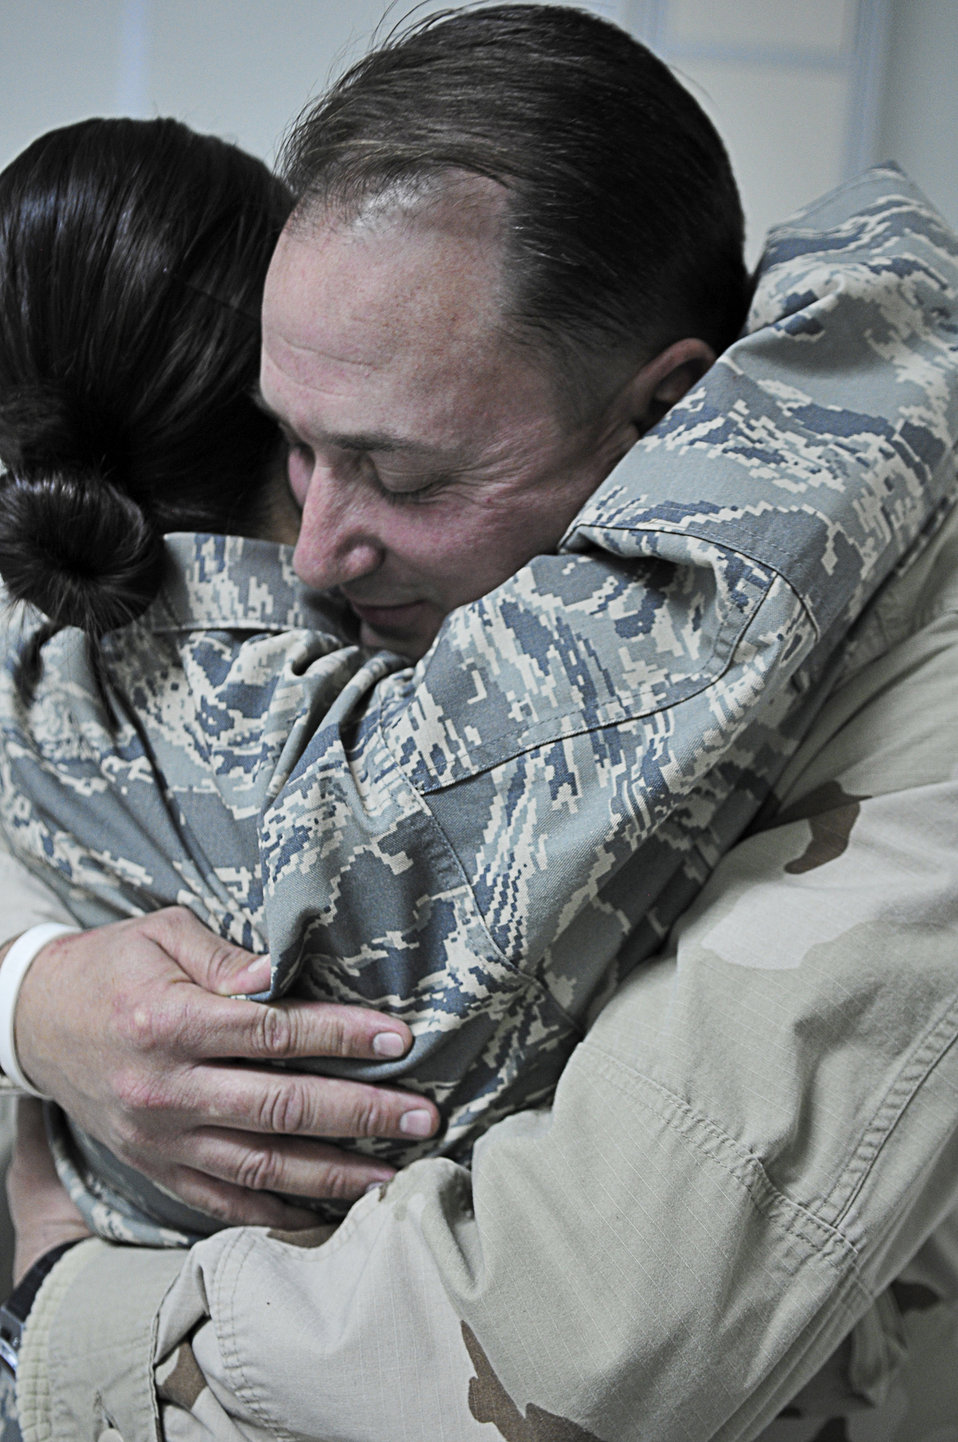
President's Promise

Air Force 2nd Lt. Andrea Laursen, a registered nurse deployed to the Craig Joint Theater Hospital at Bagram Airfield, Afghanistan, and her father Navy Hospital Corpsman 1st Class Kevin Laursen embrace after reuniting, Jan. 4, 2011, here during a visit. The father and daughter servicemembers were able to reunite thanks to a call from President Barrack Obama on Christmas Day during which Seaman Laursen asked for one Christmas wish: to see his daughter.